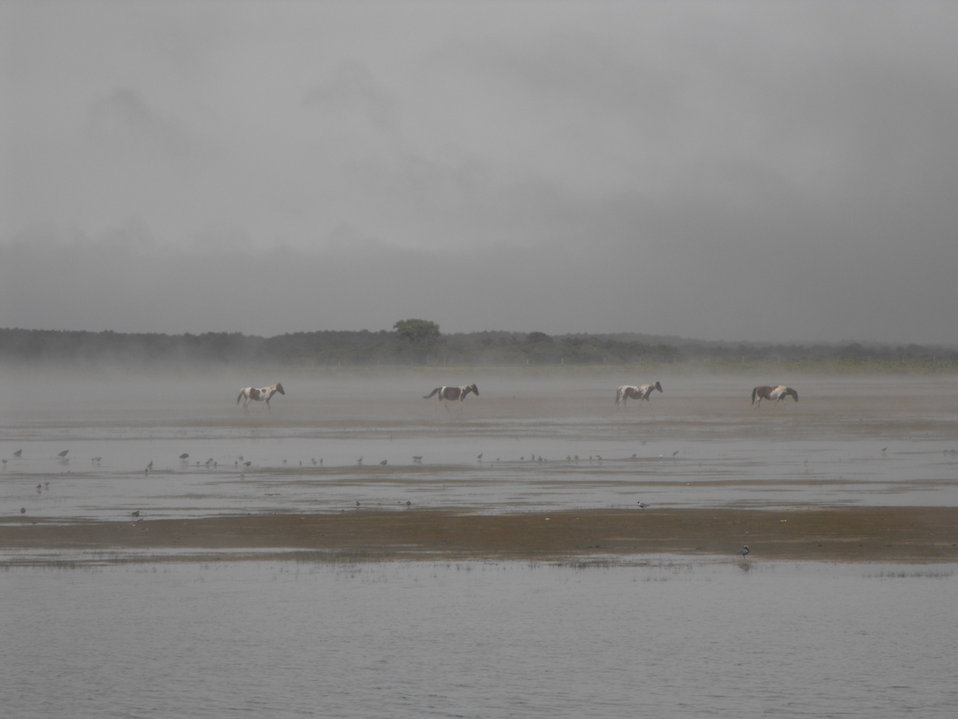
Ponies in the mist at Chincoteague National Wildlife Refuge / Assateague Island National Seashore.